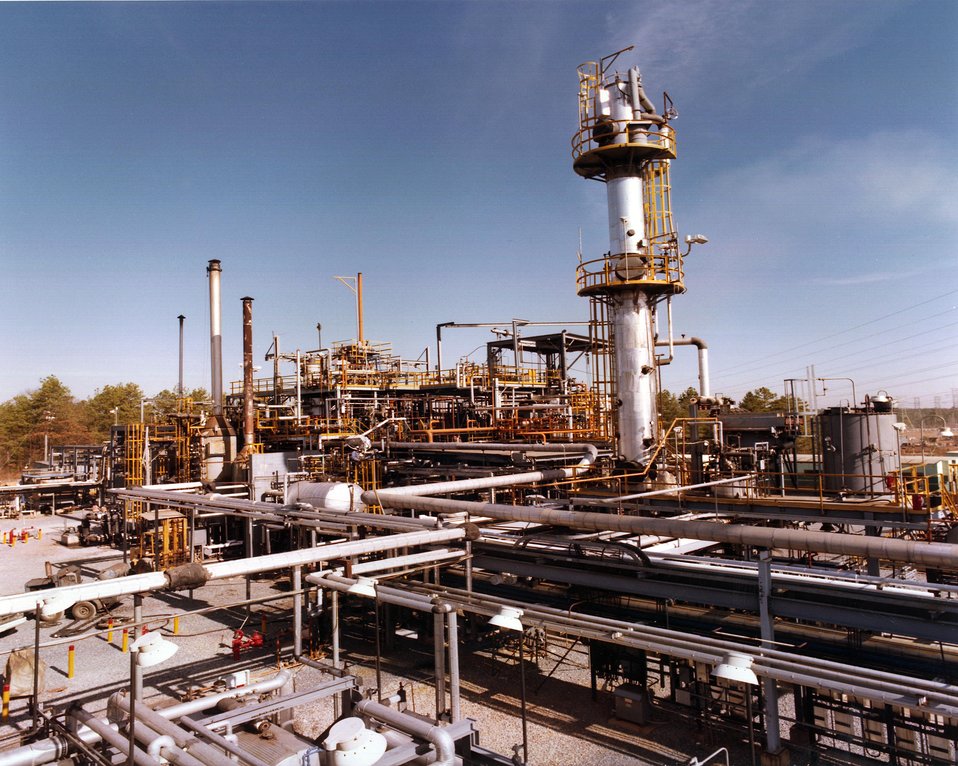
THE ADVANCED COAL LIQUEFACTION R&D FACILITY.